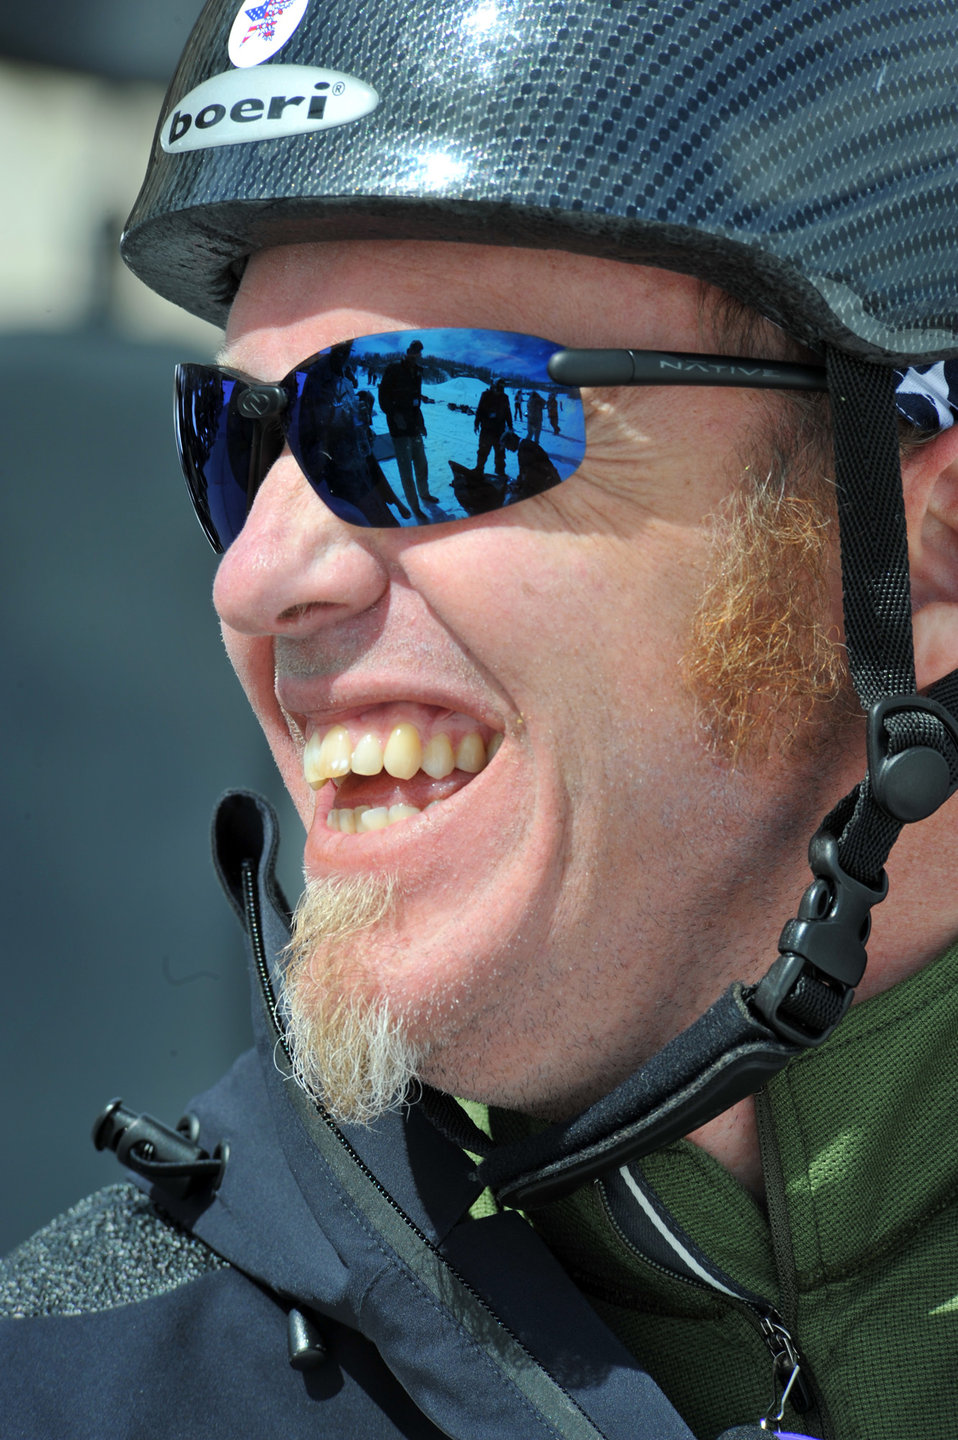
An Air Force veteran’s story: From combat controller to Paralympian

Sean Halsted smiles as he gets strapped into a mono-ski outside The Silvertree Hotel for the 24th National Disabled American Veterans Winter Sports Clinic March 30, 2010, in Snowmass Village, Colo. Mr. Halsted is an Air Force veteran and resides in Rathdrum, Idaho. The event is sponsored by the Department of Veterans Affairs and Disabled American Veterans.